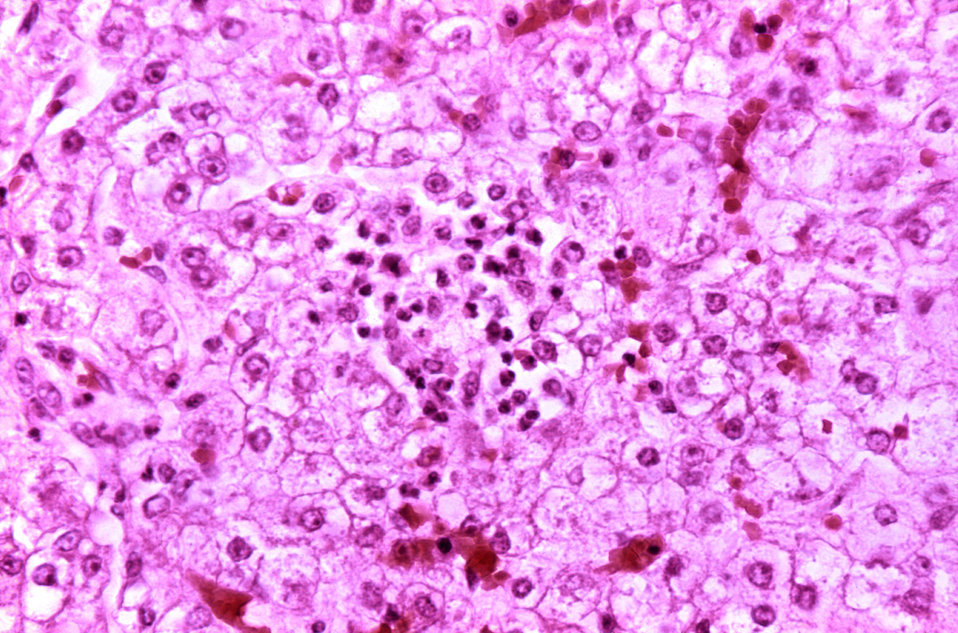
Histopathology of Reye's syndrome, liver